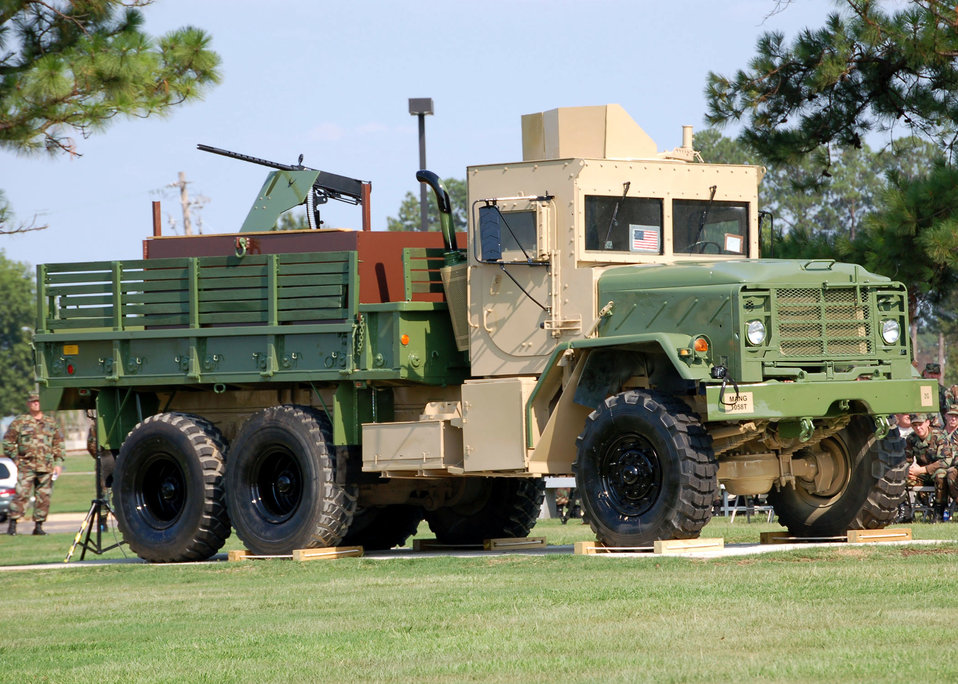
Dedication recognizes Airmen who deliver under fire

This Air Force Gun Truck was dedicated July 23 at the Air Force Enlisted Heritage Hall, Maxwell Air Force Base's Gunter Annex, Ala. The vehicle was decommissioned after an Improvised Explosive Device (IED) attack in Iraq that made the vehicle inoperable. A group of Airmen assigned to the 1 Special Operations Logistics Readiness Squadron donated more than 1,000 hours of their free time to fabricate the vehicle.